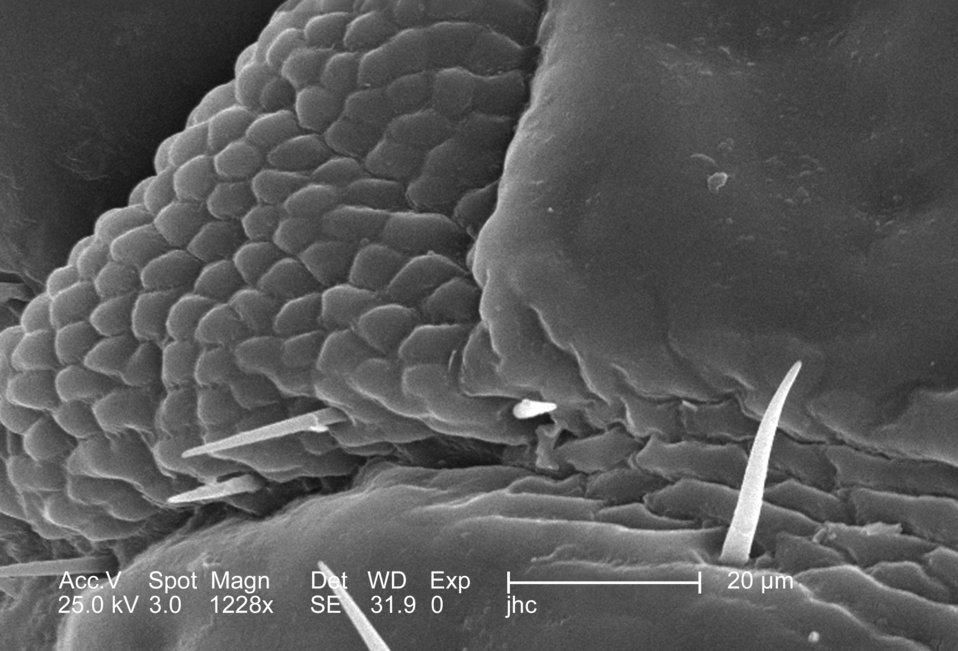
From a ventral perspective, and at a relatively high magnification of 1228x, this 2006 scanning electron micrograph (SEM) depicted an enlarged view of the chitinous, exoskeletal surface of a female louse, Pediculus humanus var. corporis, in the region where the right antennal scape attached to its cephalic region, or head. In this particular view, the exoskeleton seems to be composed of interlocking plates, which is not far from the case, in order to provide flexibility to this patent joint, the chitinous components were arranged in a plate-like manner, attached to one another with thin, by strong layers of exoskeletal chitin. Chitin is a molecule made up of bound units of acetylglucosamine, which is joined in such a way as to allow for increased points at which hydrogen bonding can occur. In this way chitin provides increased strength, and durability as an exoskeletal foundation.